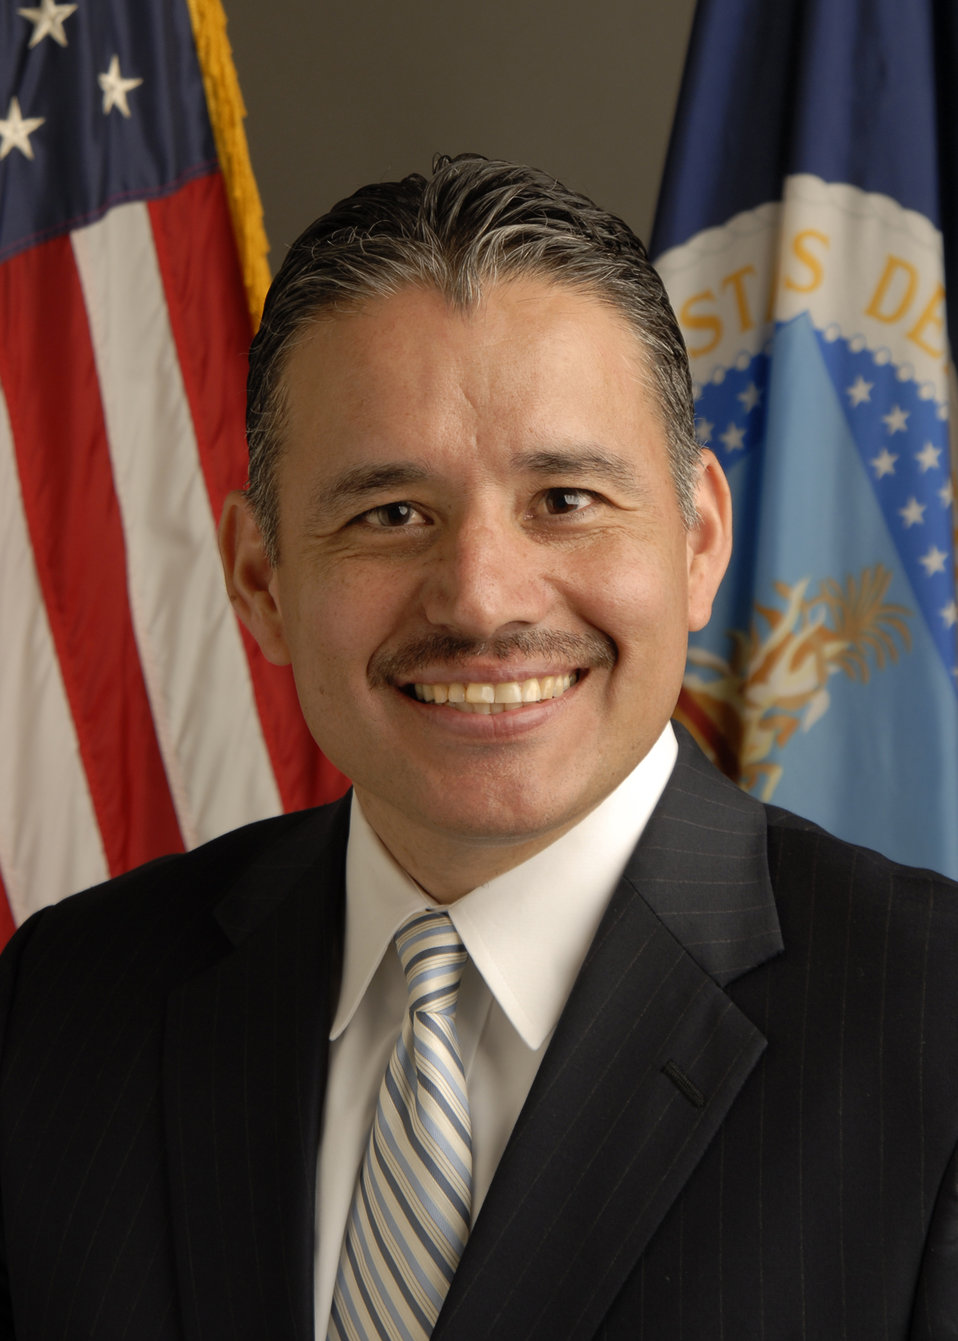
20110524-DM-KJH Deputy Assistant Secretary for Administration Oscar Gonzales

Oscar Gonzales, Deputy Assistant Secretary for Administration.